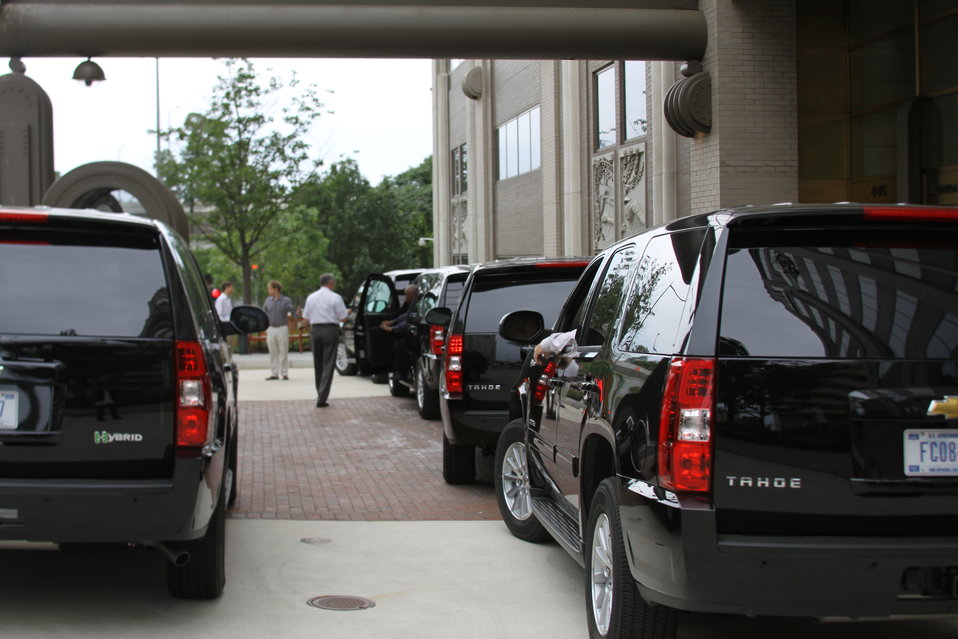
Tahoes 007